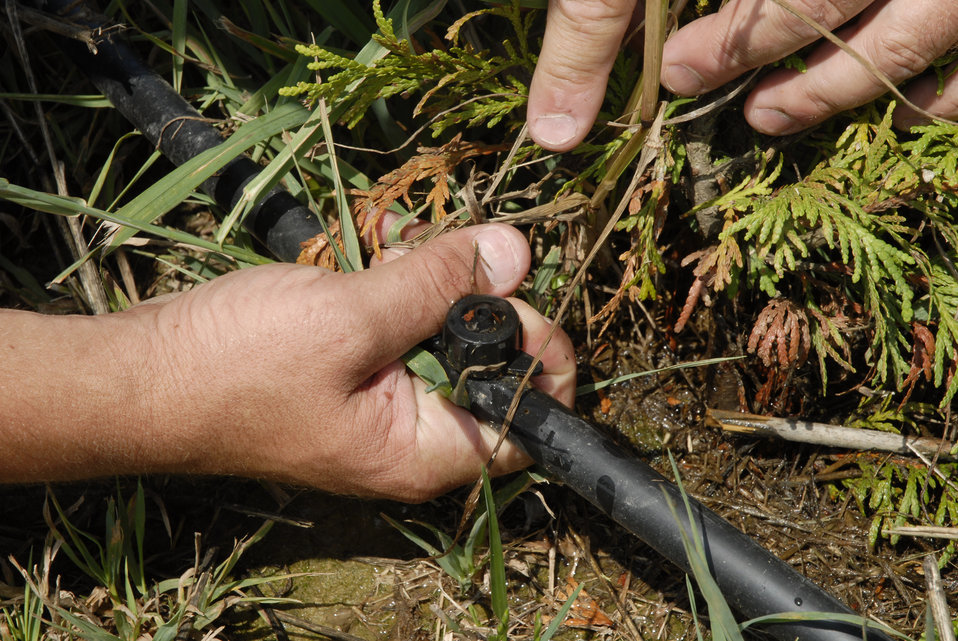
As part of the Conservation Effects Assessment Project (CEAP) study of the Chesapeake Bay region by the U.S. Department of Agriculture (USDA) Natural Resources Conservation Service (NRCS) farmers in Delaware are using drip irrigation on July 7, 2008. Drip irrigation is a system used to deliver slow, precise application of water and nutrients to a plant roots zone. This system maintains an optimum moisture level within the root zones, efficiently conserving water and helps prevent runoff while providing the proper balance of water and air needed for successful plant growth.